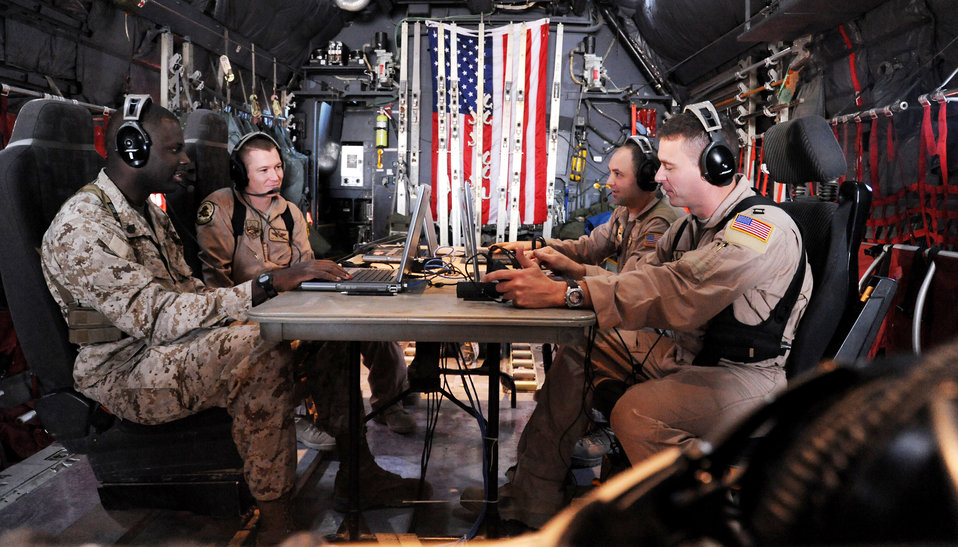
Convoy 911: Joint unit extends battlespace communication

Servicemembers from the 777th Expeditionary Airlift Squadron joint airborne battle staff detachment prepare for a mission on a C-130 Hercules Nov. 24, 2009 at Joint Base Balad, Iraq. The JABS is a joint operation focused on providing airborne communications support to ground forces.